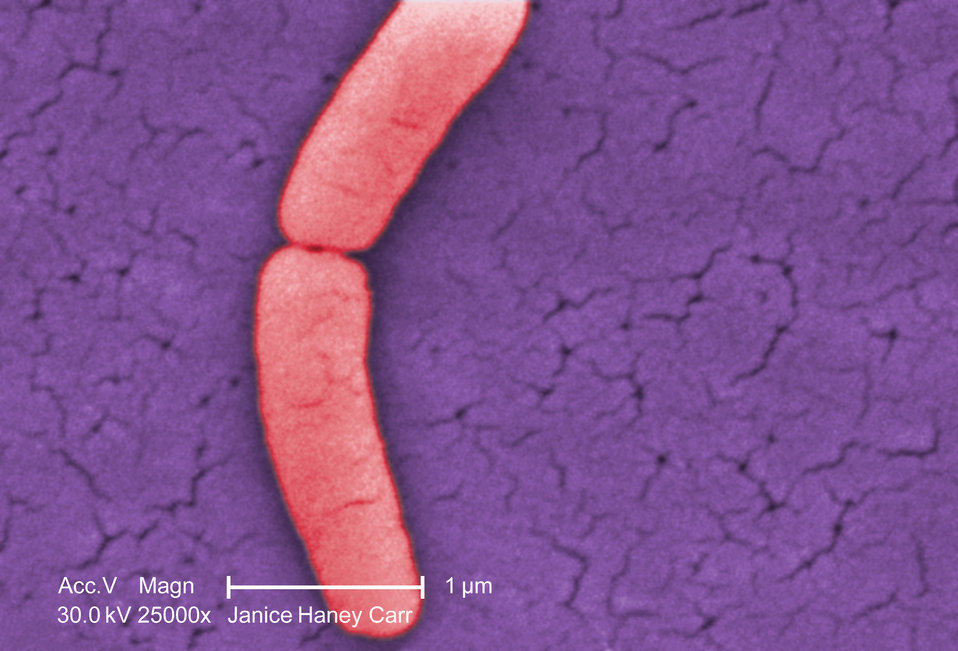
Under a very high magnification of 25000X, this colorized scanning electron micrograph (SEM) revealed the presence of a single Gram-negative Salmonella typhimurium bacterium, which was imaged right at the point where it was undergoing the process of cell division, resulting in the formation of two separate organisms. This dividing bacterium had been isolated from a pure culture.